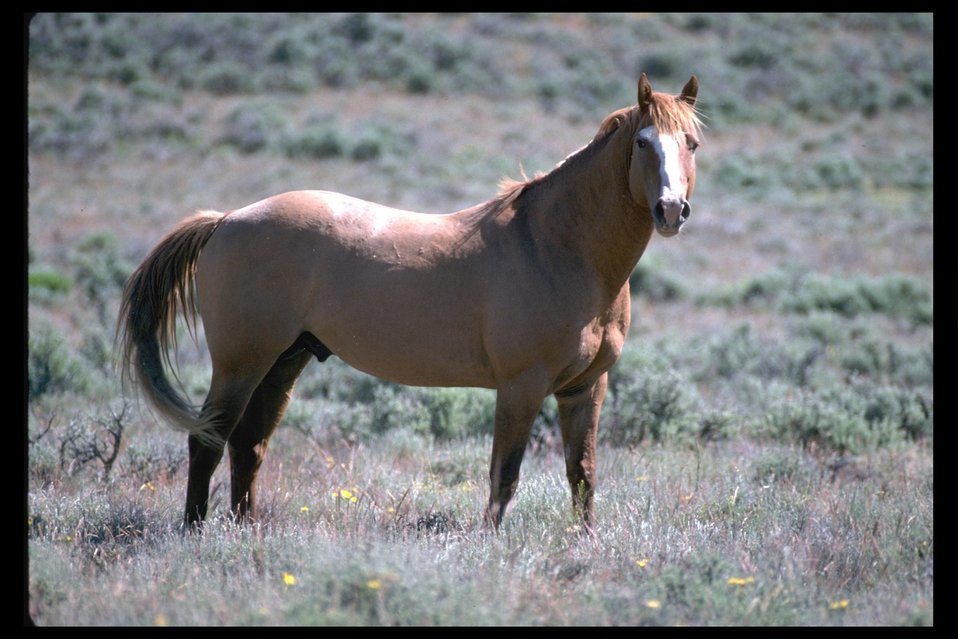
Lazarus, the dominant Stallion in West Warm Springs HMA.